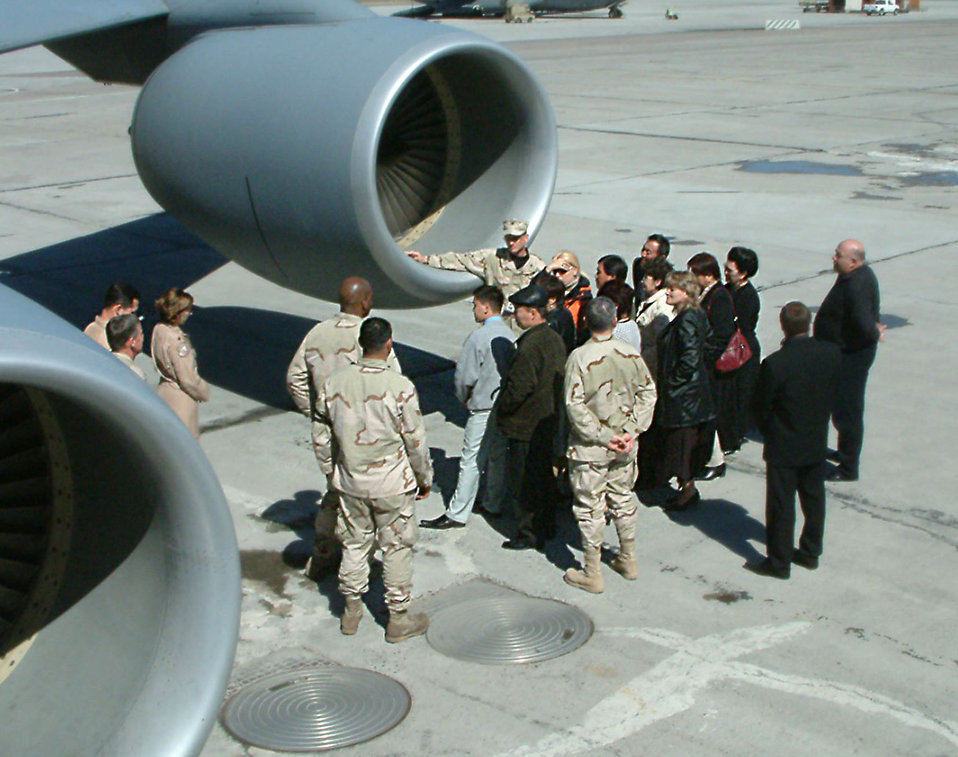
Manas AB and local community forge bonds of friendship

Col. Randy Kee and leaders from the 22nd Expeditionary Air Refueling Squadron explain the KC-135 Stratotanker mission to mayors of local villages invited to Manas Air Base, Kyrgyzstan, as part of a new outreach initiative Friday, March 24, 2006. Colonel Kee is the 376th Air Expeditionary Wing commander.